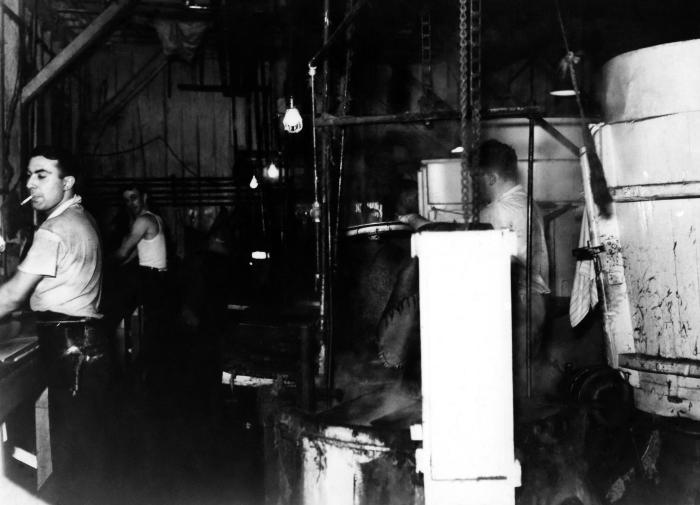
This historical image, which was provided by the Center for Disease Control's (CDC), National Institute for Occupational Safety and Health (NIOSH), was shot inside a Connecticut hat manufacturing plant. The photograph depicted a number of hat manufacturers on a hat-assembly line, one of whom off to the right, was in the process of sizing a felt hat by implementing steam, thereby, softening the fur, making it more malleable to the sizing process. Working with the 'carroted' animal fir, opened the workers up to the possibility of succumbing to mercury poisoning, a heavy metal used in the processing of the raw fir. The steam, liberated from the kneading and sizing processes, facilitated the airborne dissemination of the mercury nitrate, which could easily be inhaled without proper ventilation, and a protective breathing mask, with which these men were not equipped.